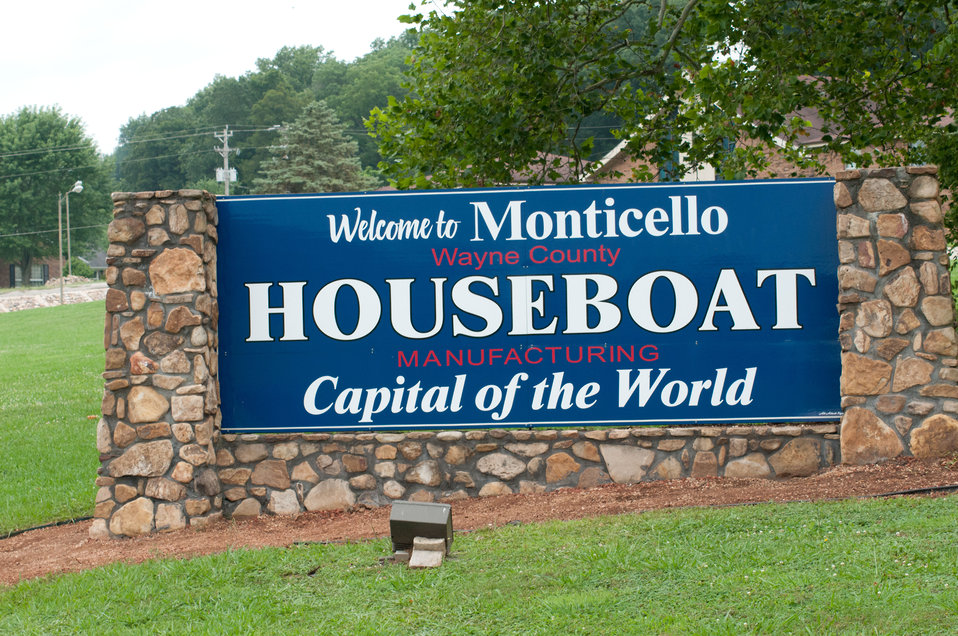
Monticello, Kentucky is the self proclaimed houseboat capital of the world, on Wednesday, July 13, 2011 USDA Photo by Lance Cheung